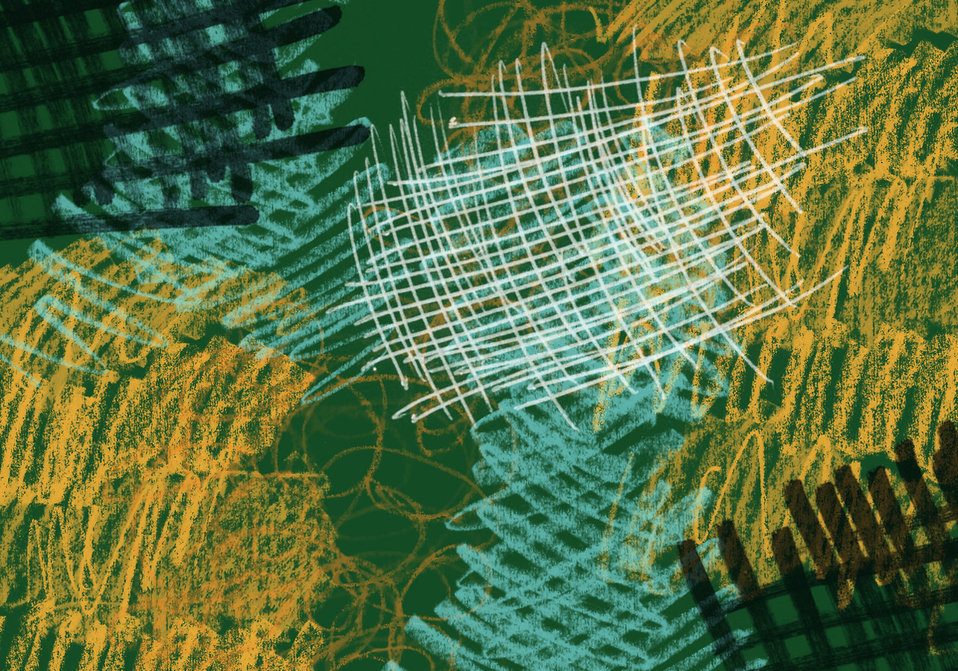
Scribble background in green and orange.